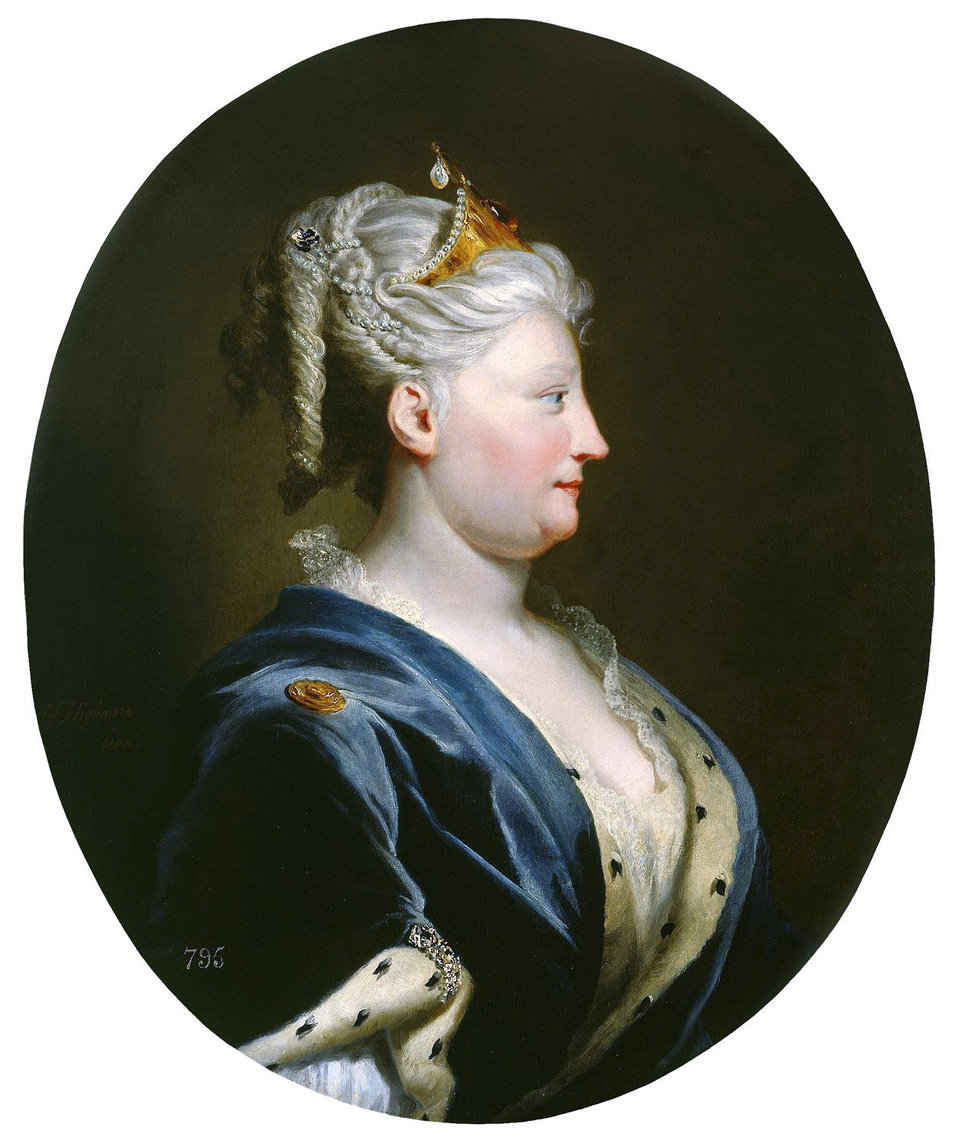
Caroline of Ansbach - Highmore c. 1735